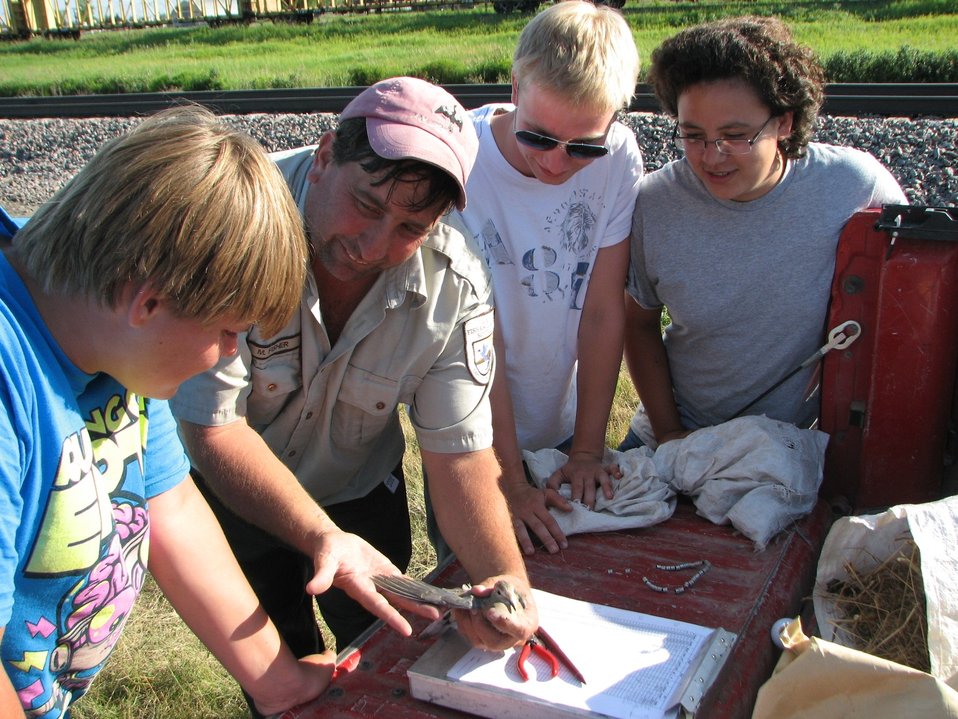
Bird Banding at Devil's Lake

Devil’s Lake Wetland Management District Biologist Mark Fisher explains mourning dove banding to students in the Youth Conservation Corps in North Dakota. The doves are banded as part of the National Mourning Dove Management Plan.